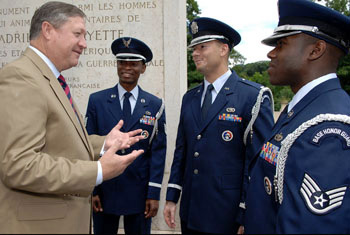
Secretary of the Air Force visit honors memorial and supports Paris Air Show

Secretary of the Air Force Michael Donley praises Tech. Sgt. Mike Jackson, 1st Lt. Chris McDaniels and Staff Sgt. Fred Stevenson, members of the 52nd Fighter Wing, Spangdahlem Air Base Honor Guard in Germany, for their support to the wreath laying ceremony at the Memorial de l'Escadrille La Fayette just outside of Paris June 13. The ceremony attended by U.S. senators, the Secretary of the Air Force, U.S. and French dignitaries, paid honor to the American volunteer combat flying aces known as the